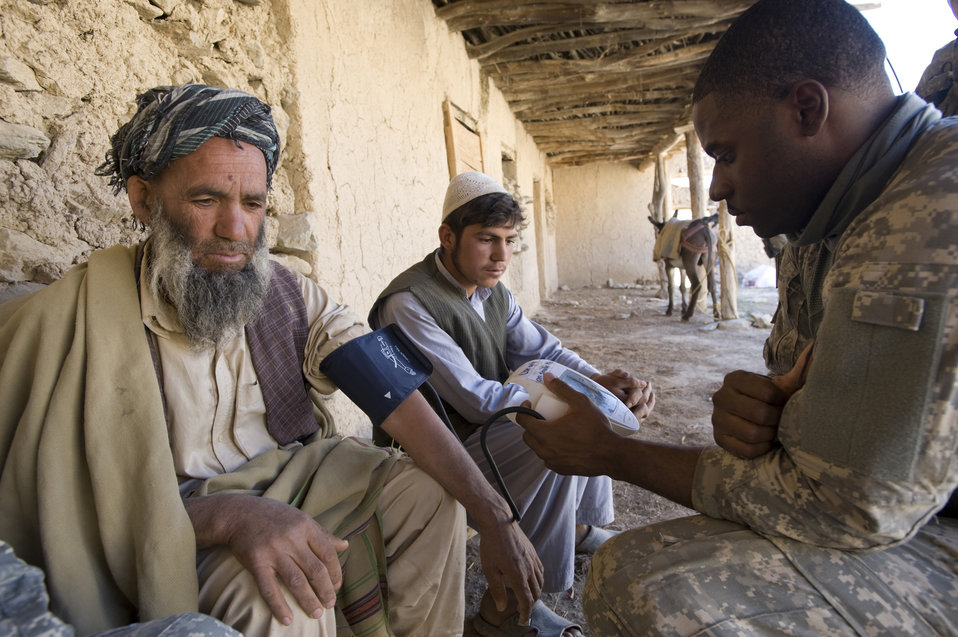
Joint Expeditionary Tasking (JET)

Senior Airman Courtney Thompson, a Provincial Reconstruction Team medic in Afghanistan, examines an Afghan man at a village medical outreach clinic. Air Force Chief of Staff Norton Schwartz announced Dec. 17 that an Airman previously categorized as filling an